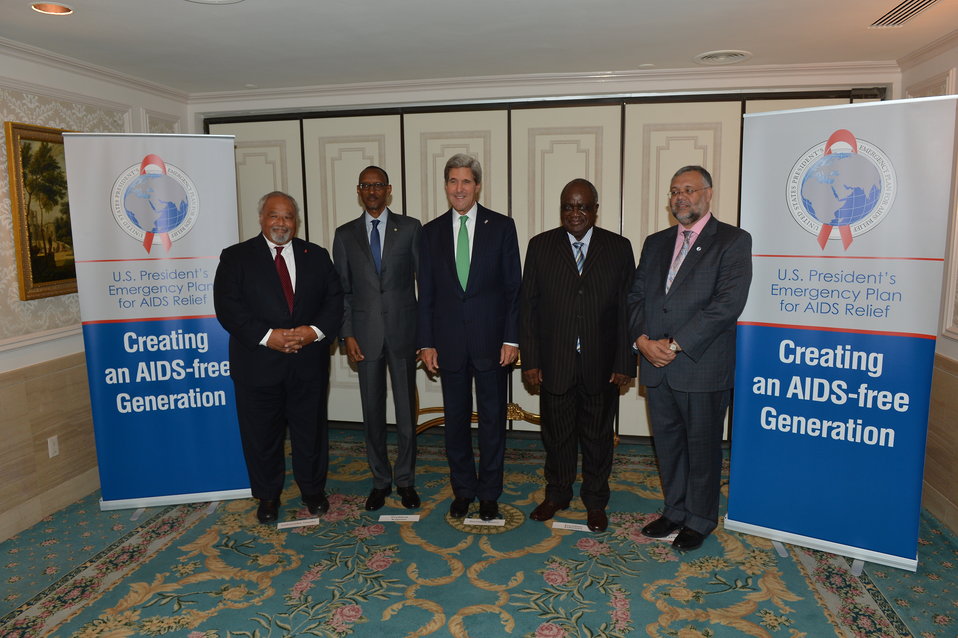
Secretary Kerry Hosts a High-Level Meeting With PEPFAR Partners

U.S. Secretary of State John Kerry, center, with Ambassador Eric Goosby, the U.S. Global AIDS Coordinator, hosts a High-Level Meeting with PEPFAR Partners in New York City on September 25, 2013.